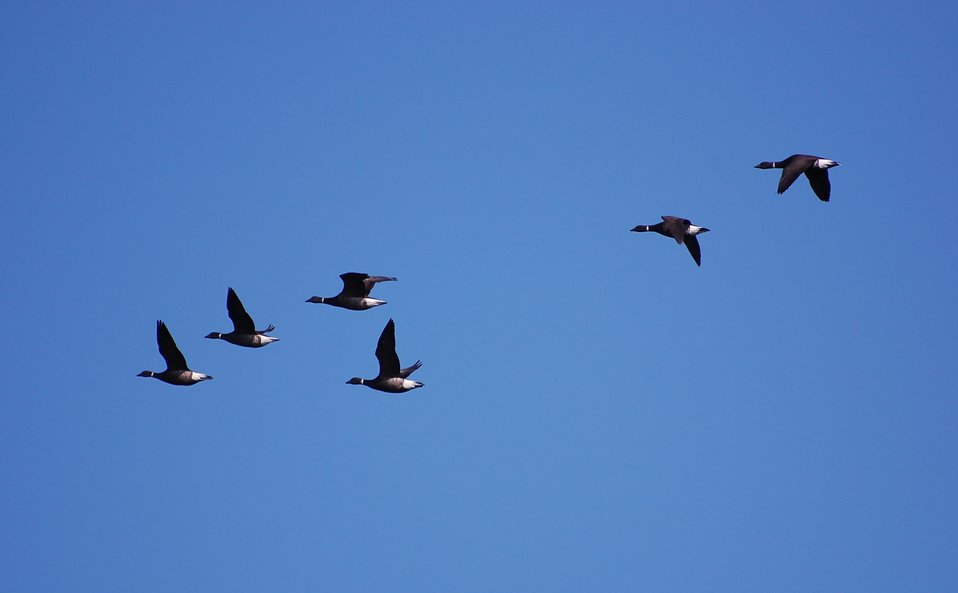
Brant at Izembek Lagoon

Izembek National Wildlife Refuge